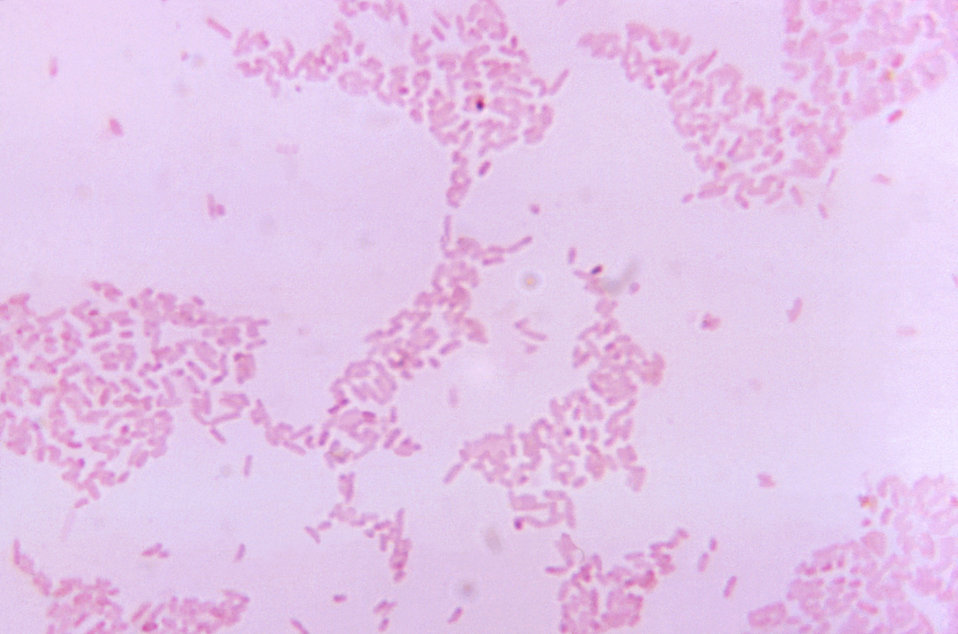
This micrograph depicts Bacteroides fragilis subsp. thetaiota bacteria that had been cultured in blood agar medium for 48 hours.